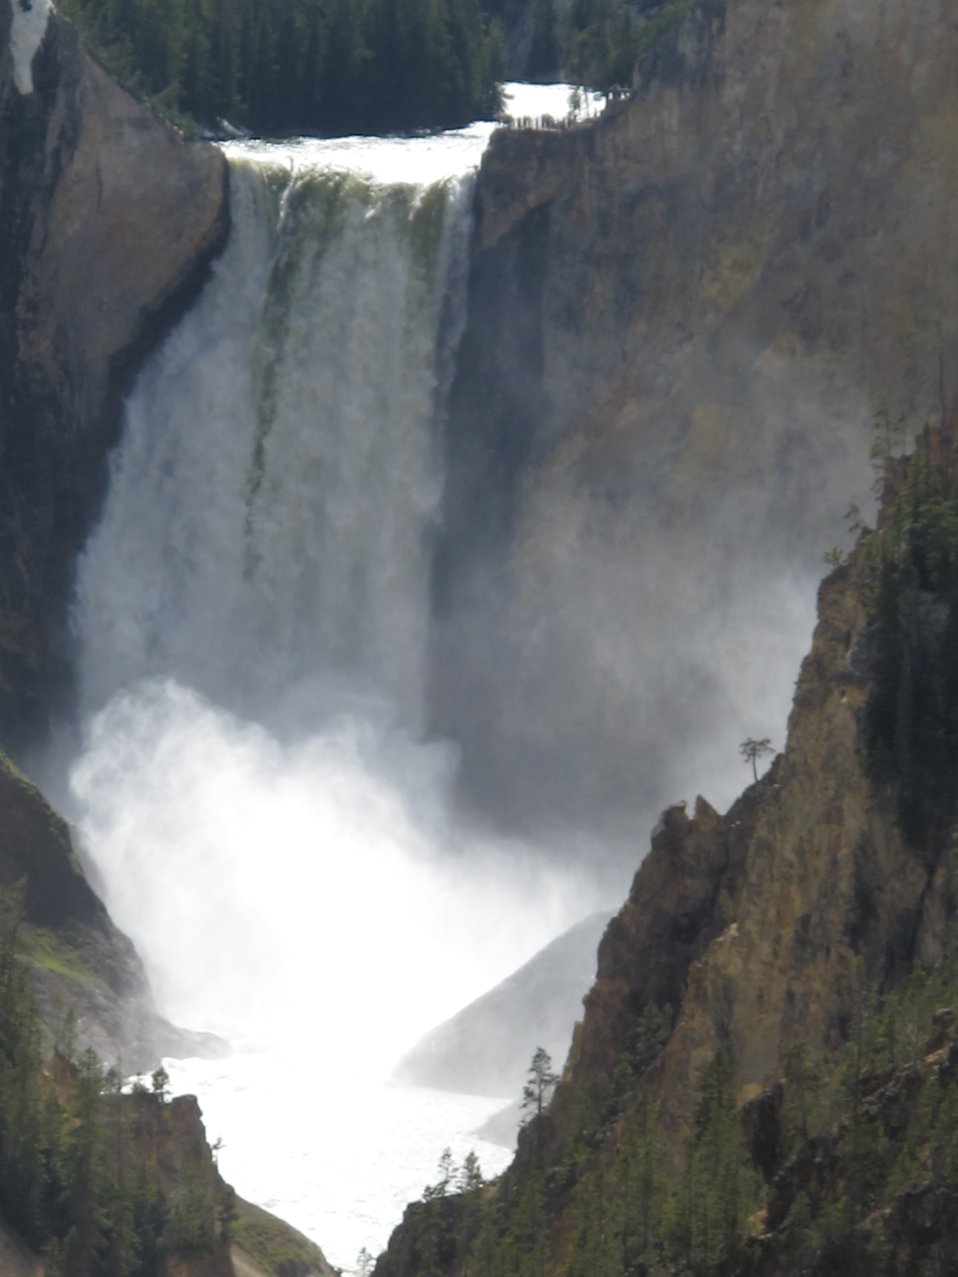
Upper falls of the Yellowstone River flexing its muscle with early summer snow- melt runoff.